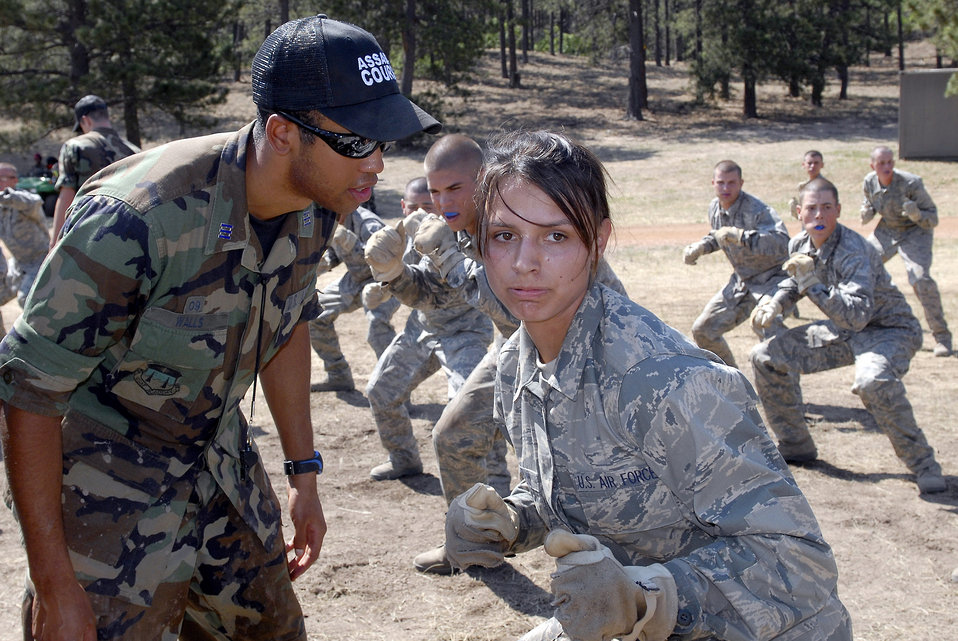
New cadets discover Jacks Valley

U.S. Air Force Academy Cadet 1st Class Clinton Walls directs Basic Cadet Fanita Schmidt in hand combat skills during the field training portion of basic training July 16 at the U.S. Air Force Academy in Colorado.